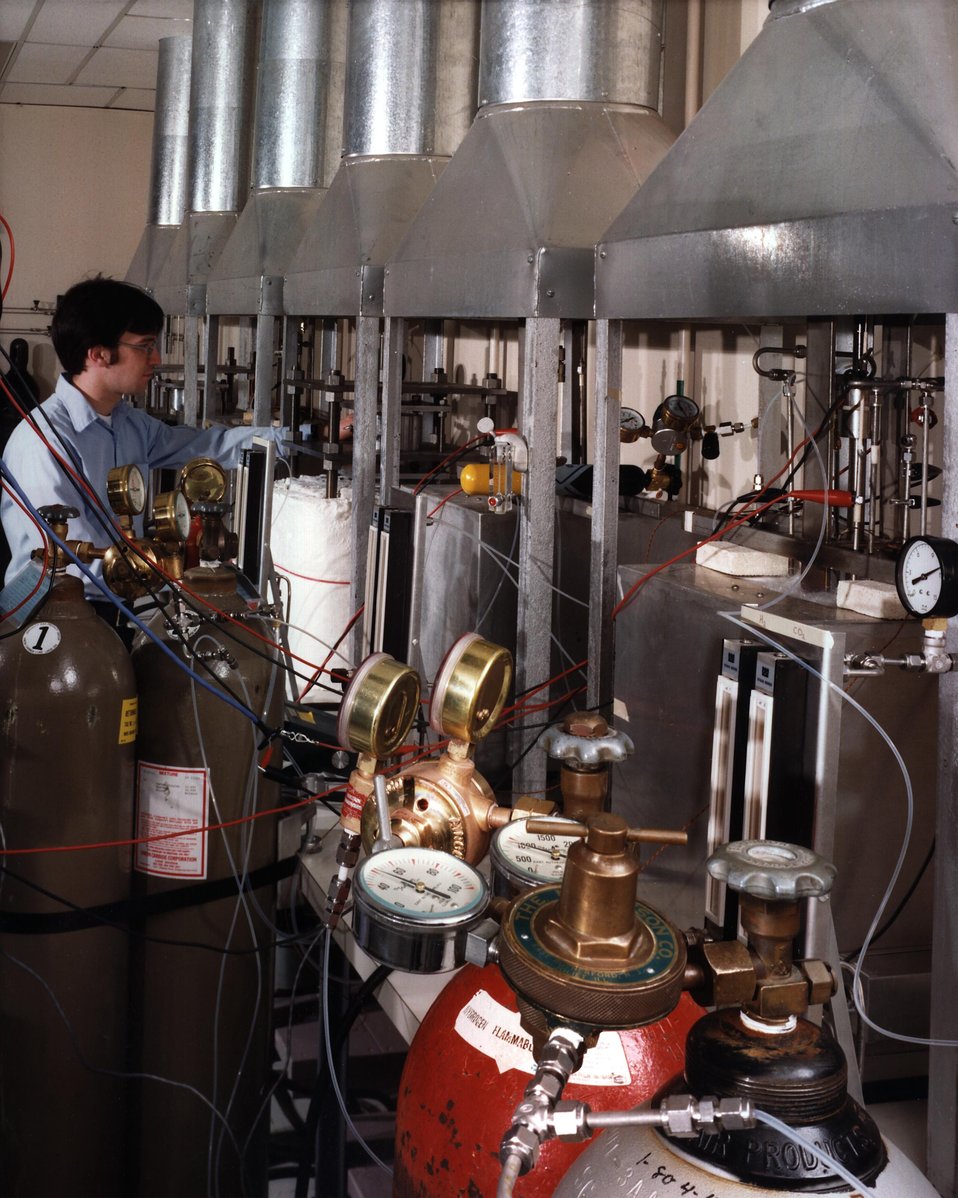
A SERIES OF LABORATORY-SCALE MOLTEN CARBONATE FUEL CELLS UNDERGOING TESTS AT THE GENERAL ELECTRIC R&D CENTER.

A NEWER METHOD OF COMMERCIALLY GENERATING ELECTRICITY IS BEING DEVELOPED BY GENERAL ELECTRIC. FUEL CELLS, BATTERY-LIKE GENERATORS, PRODUCE ELECTRICITY BY AN ELECTROCHEMICAL RE- ACTION. UNLIKE THE BATTERY, THE FUEL CELL HAS A CONSTANT SOURCE OF FUEL. IN THIS PROGRAM, G.E. IS PLANNING TO USE GASIFIED COAL TO POWER THE CELLS. THIS HYDROGEN-RICH FUEL IS FED INTO ONE SIDE OF THE CELL WHILE OXYGEN IS FED INTO THE OTHER. THIS CREATES A NEGATIVE CHARGE AT THE HYDROGEN (ANODE) SIDE AND A POSITIVE CHARGE AT THE OXYGEN (CATHODE) SIDE. THE ATTRACTION OF THESE CHARGES CAUSES THE ELECTRONS TO FLOW THROUGH THE MOLTEN CARBONATE ELECTROLYTE. THIS MOVEMENT OF THE ELECTRONS CREATES THE ELECTRICITY. BECAUSE THE MOLTEN CARBONATE FUEL CELL HAS A HIGH OPERATING TEMPERATURE, IT CREATES EXCESS HEAT WHICH CAN BE USED TO POWER OTHER ELECTRIC GENERATORS.